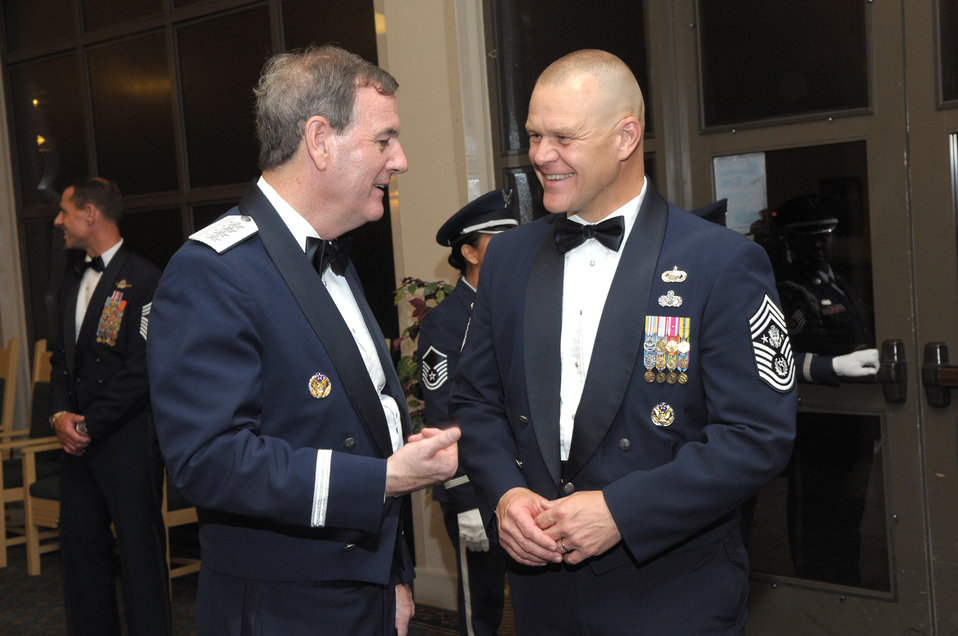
AETC inducts newest member into Order of the Sword

Gen. Stephen R. Lorenz talks with Chief Master Sgt. of the Air Force James A. Roy July 16, 2010 after his induction into the Order of the Sword at the Gateway Club on Lackland Air Force Base, Texas. General Lorenz is the Air Education and Training Command commander.